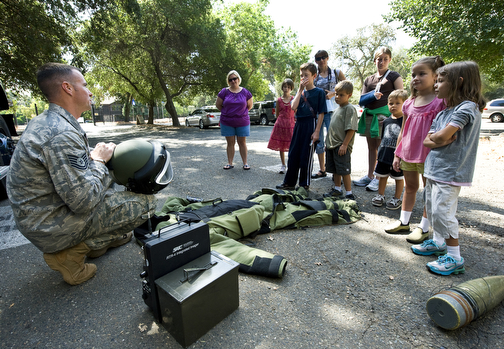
Air Force Week-Sacramento

Tech. Sgt. Miles Lambert explains the use of the EOD-9 Bomb Suit to children visiting the Discovery Museum of Sacramento during aerospace career day for Air Force Week-Sacramento, Sept. 10, 2009. Air Force Week is an event using various activities and exhibitions to educate the community about the Air Force's capabilities and missions. Sergeant Lambert is from the 60th Civil Engineer Squadron at Travis Air Force Base, Calif.